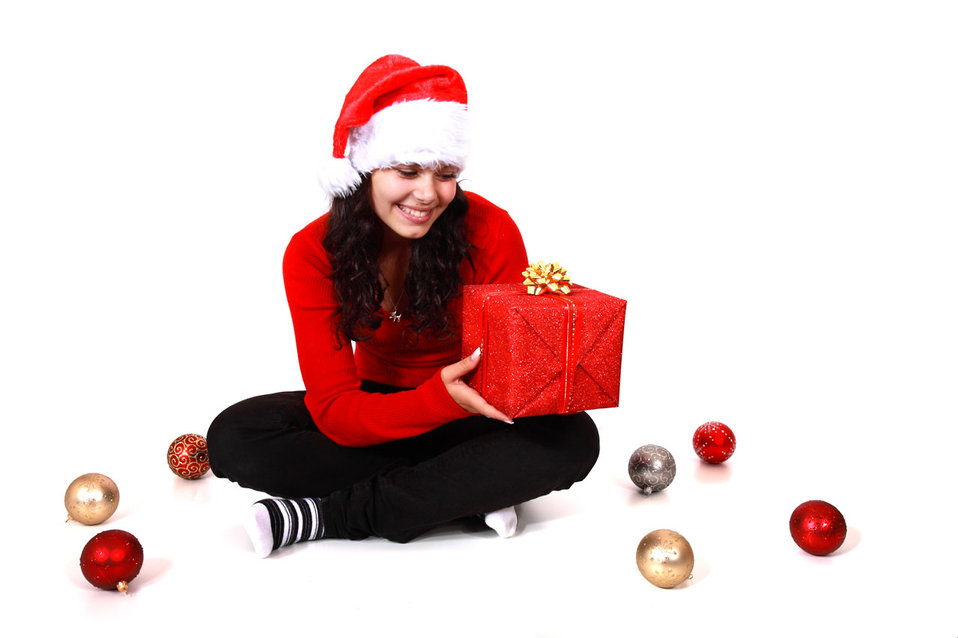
Young woman with christmas gift isolated on white background.